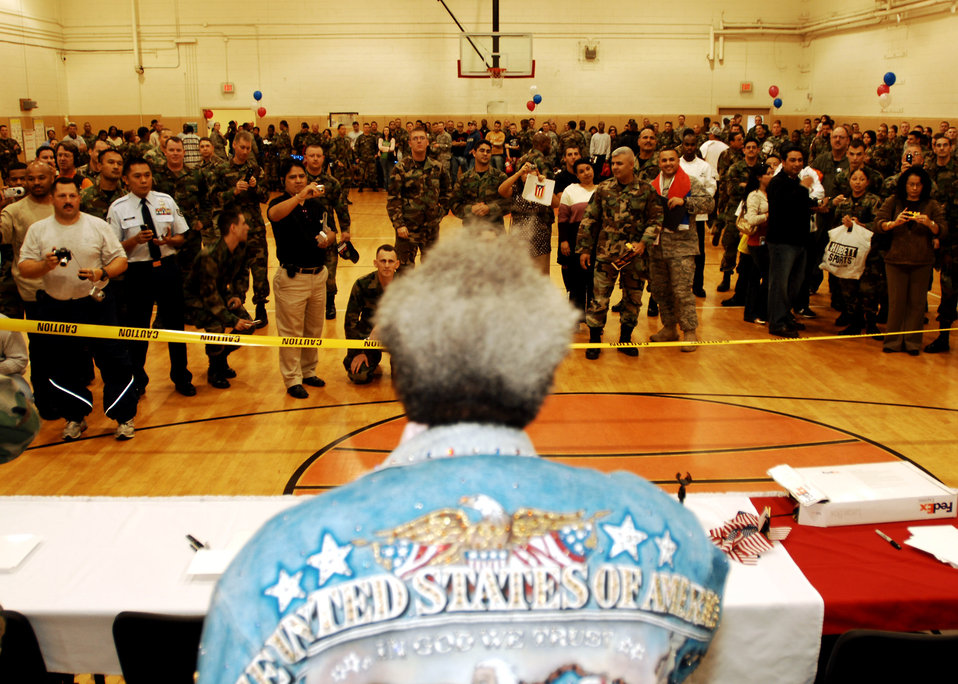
Boxing trio visits Hurlburt Field Airmen

Boxing promoter Don King speaks to Airmen at the Commando Fitness Center Dec. 5 at Hurlburt Field, Fla. Roy Jones Jr., Felix Trinidad and Mr. King visited Hurlburt Field as part of their tour of military installations to show support for military members.